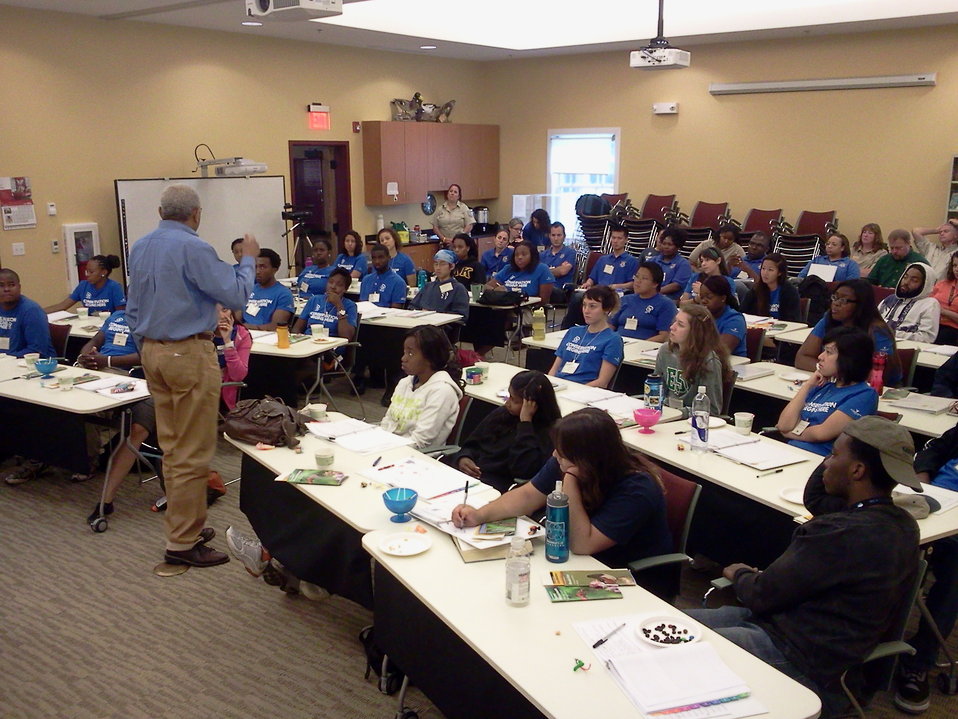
Flipp's Words of Wisdom

Flipp Hagood speaks to the 2012 CDIP intern class about what it means to work in the Fish and Wildlife Service and have this opportunity.